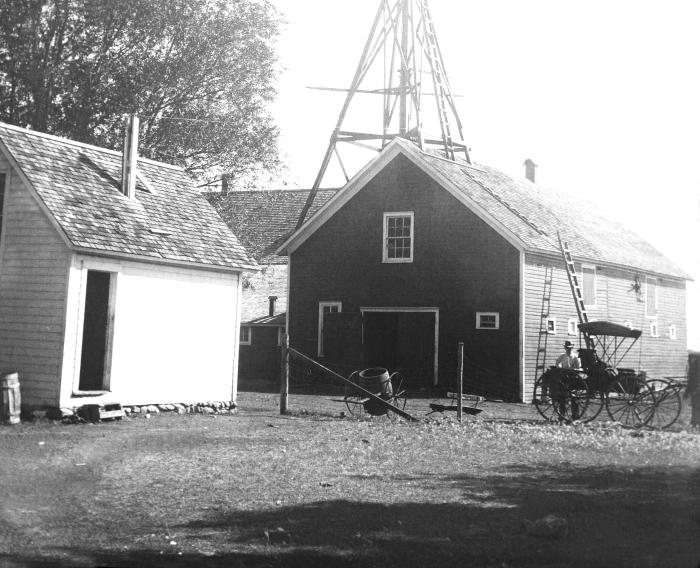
This historic 1909 photograph depicted an example of a properly constructed 'drilled' well on the grounds of a Minnesota farm home. It was one of a series of instructional photos used by the Minnesota Board of Health to train public health workers.